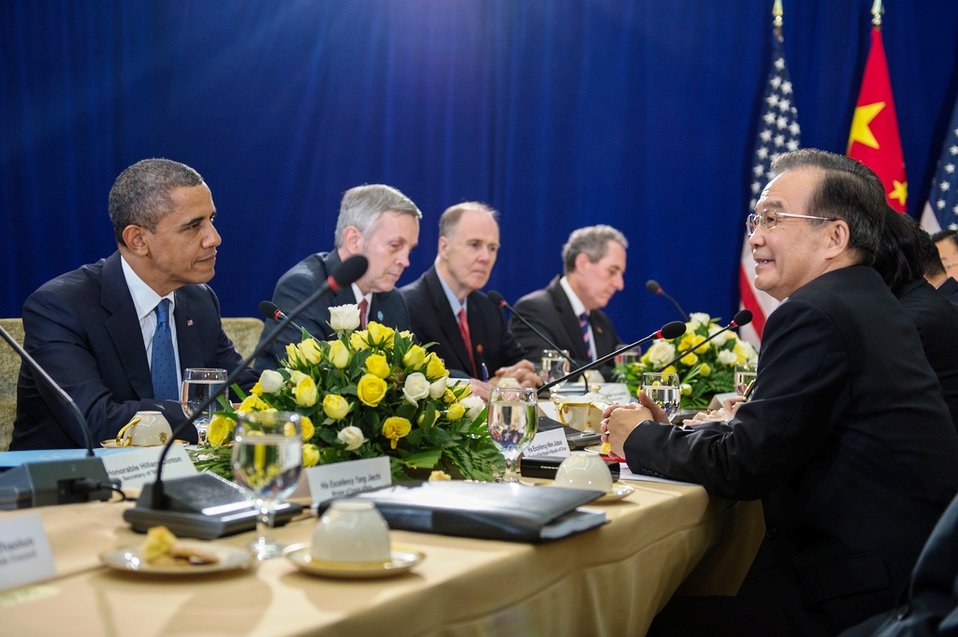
President Obama Meets With Chinese Prime Minister Wen Jiabao

U.S. President Barack Obama meets with Chinese Prime Minister Wen Jiabao for a bilateral meeting during the East Asia Summit at the Peace Palace in Phnom Penh, Cambodia, November 20, 2012. President Obama is the first U.S. President to visit Cambodia.